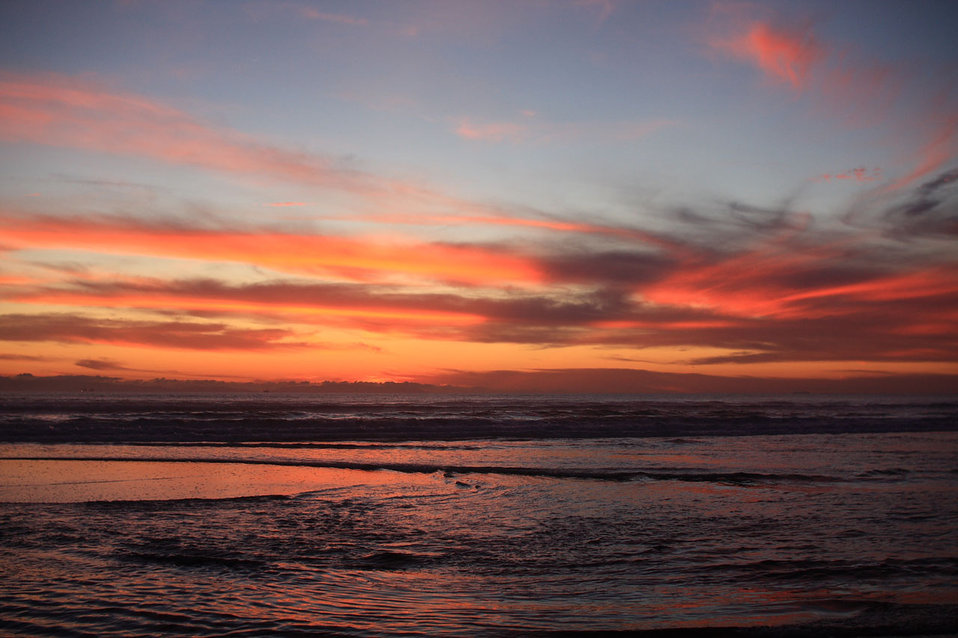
Southern california sunset

Sunset shot at low tide on the beach at huntington beach, california.